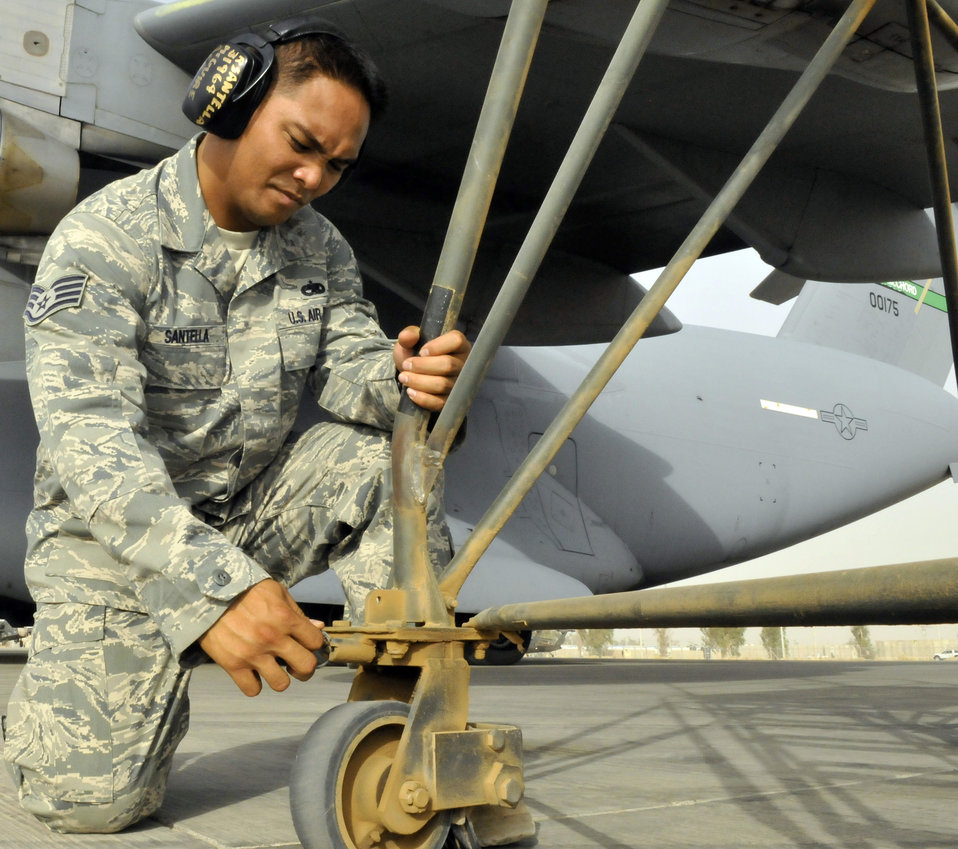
Balad Airmen

Staff Sgt. Ryan Santella locks a caster wheel of a B5 maintenance stand into place July 12, 2010, at Joint Base Balad, Iraq. The B5 Maintenance stand is the preferred stand for reaching high access panels on the C-17 Globemaster III. Sergeant Santella is a 521st Air Mobility Operations Group, Det. 5 hydraulics journeyman.